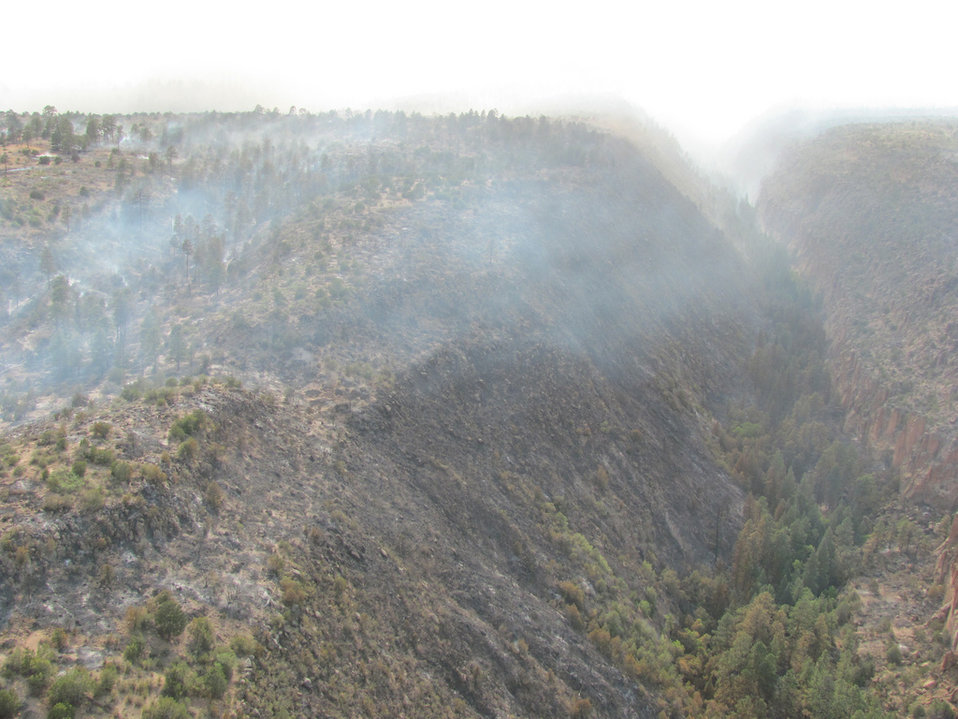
LANL helicopter recon.

The Las Conchas Fire started on June 26, 2011, it was caused by a fallen tree that caught fire after it came in contact with power lines nearby. The fire had burned over 121,000 acres, including 63 residences. At no time were hazardous materials in danger at Los Alamos National Laboratory. The lab was closed for a week and reopened on July 6th.